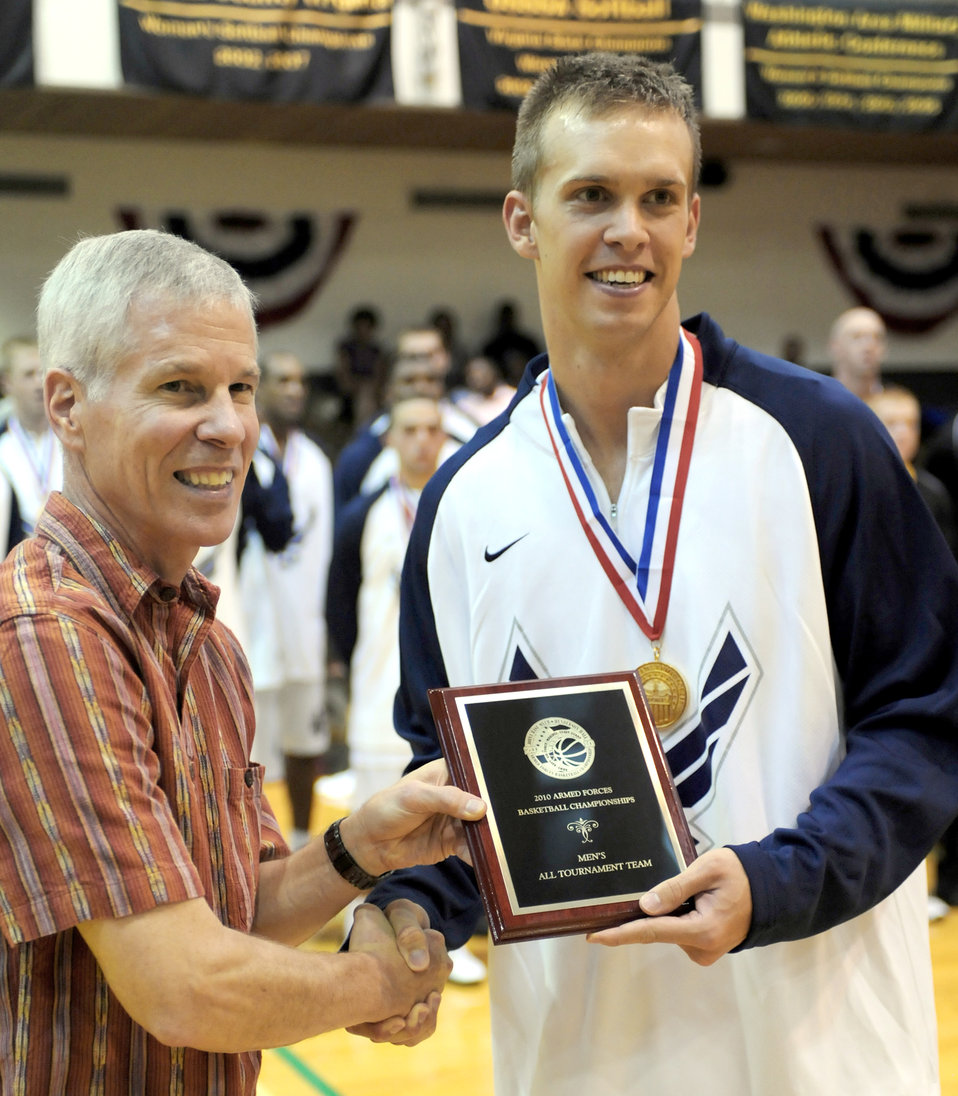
Airman named MVP, helps Team USA win gold

Second Lt. Matthew Holland was named most valuable player after leading Team USA to the 2010 SHAPE International Men's Basketball Championship Nov. 29 through Dec. 4, 2010, in Mons, Belgium.